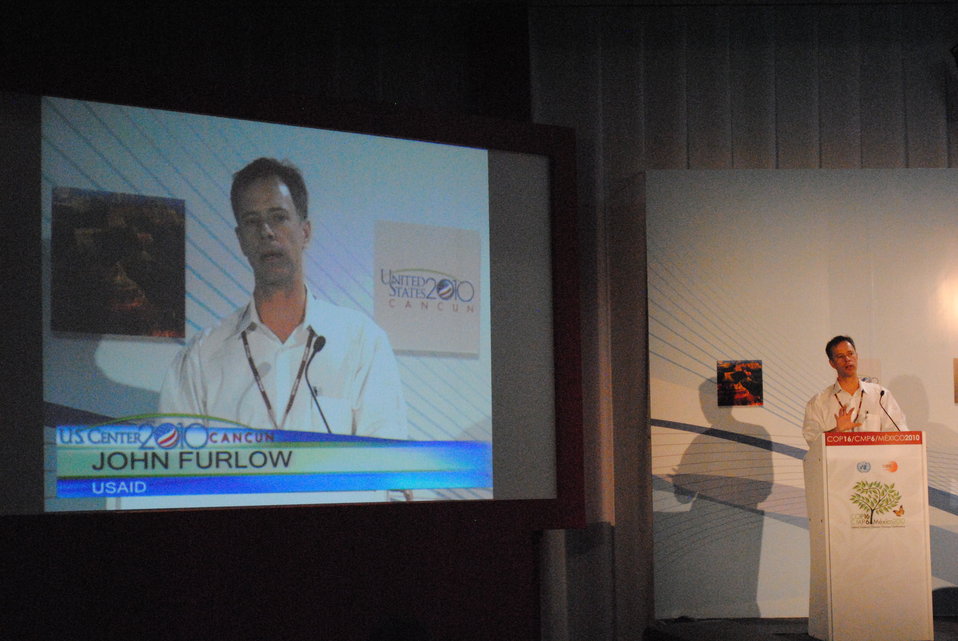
USAID Specialist Furlow Speaks About USAID's Participatory Approach to Development-Based Cliamte Change Adaptation

USAID Climate Change Specialist John Furlow speaks to the audience during a U.S. Center side event, 'Stakeholder Driven Approach to Adaptation -- East Caribbean,' at COP-16 in Cancun, Mexico, on November 30, 2010.